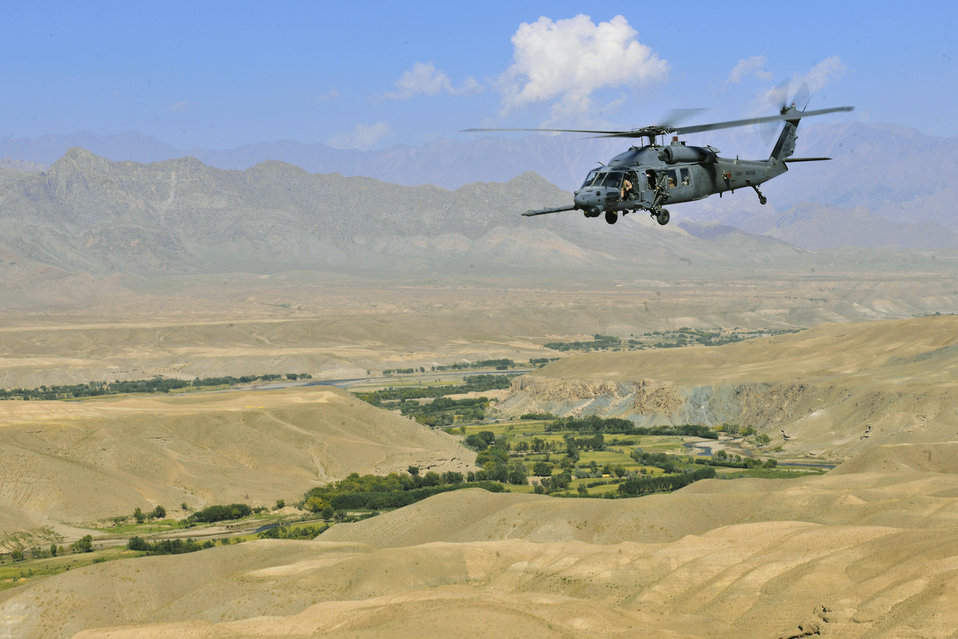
Pararescueman train to help save lives

An HH-60G Pave Hawk assigned to the 33rd Expeditionary Rescue Squadron flies through a valley near Bagram Airfield, Afghanistan, Sept. 24, 2010.